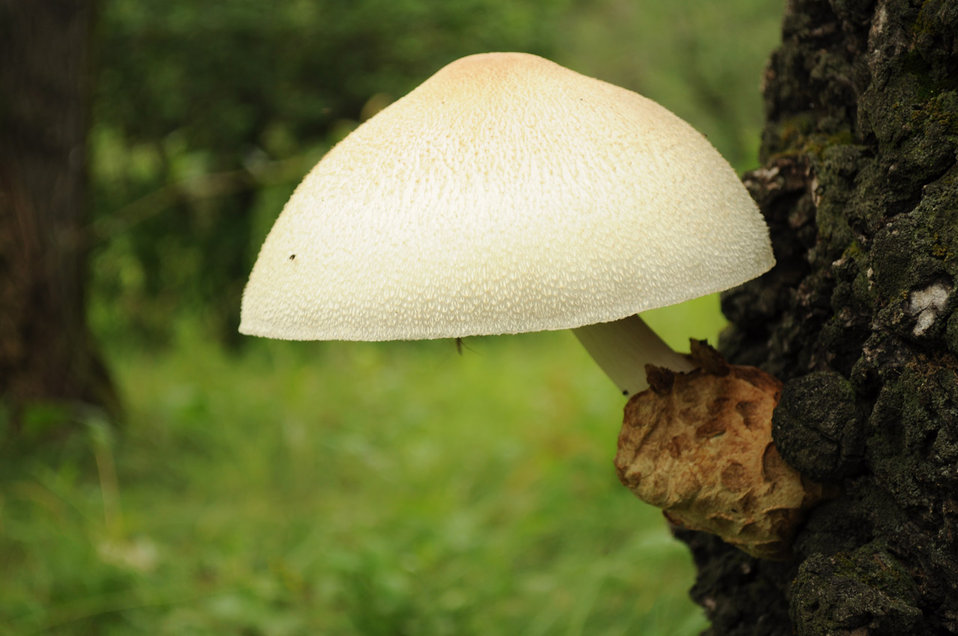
Large mushroom

Large white fungus on a tree.